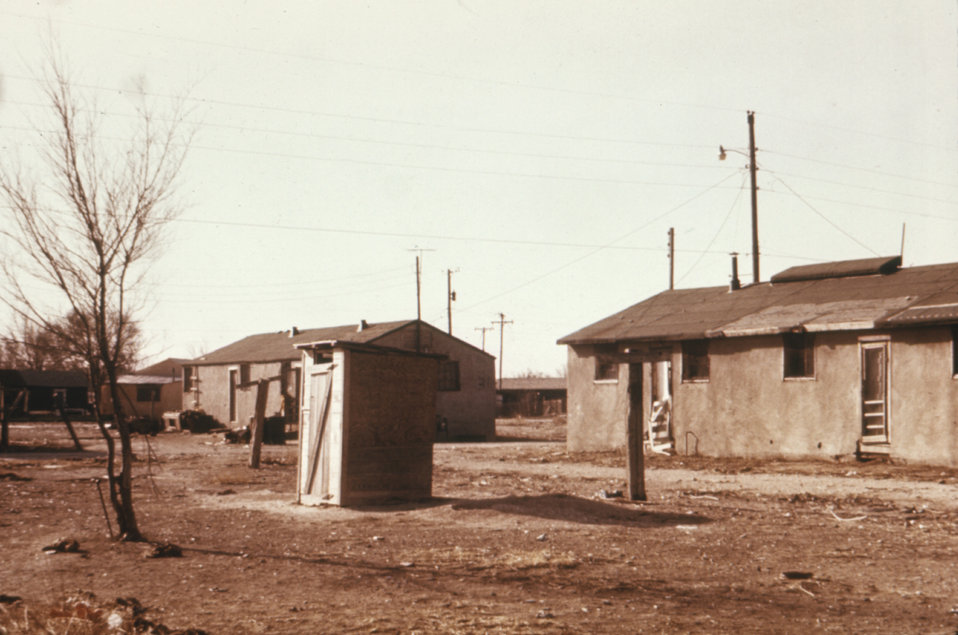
This was part of a series used to familiarize public health inspectors with sanitation conditions in migrant worker camps.